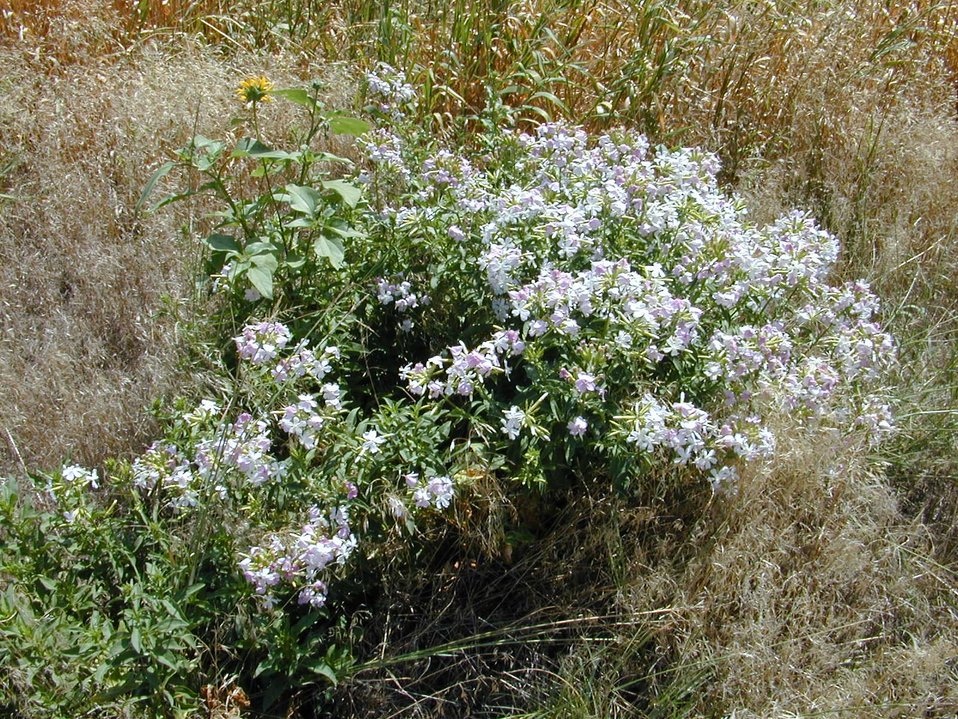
Phlox Cottonwood Field Office UCSC Upper Columbia Salmon Clearwater District